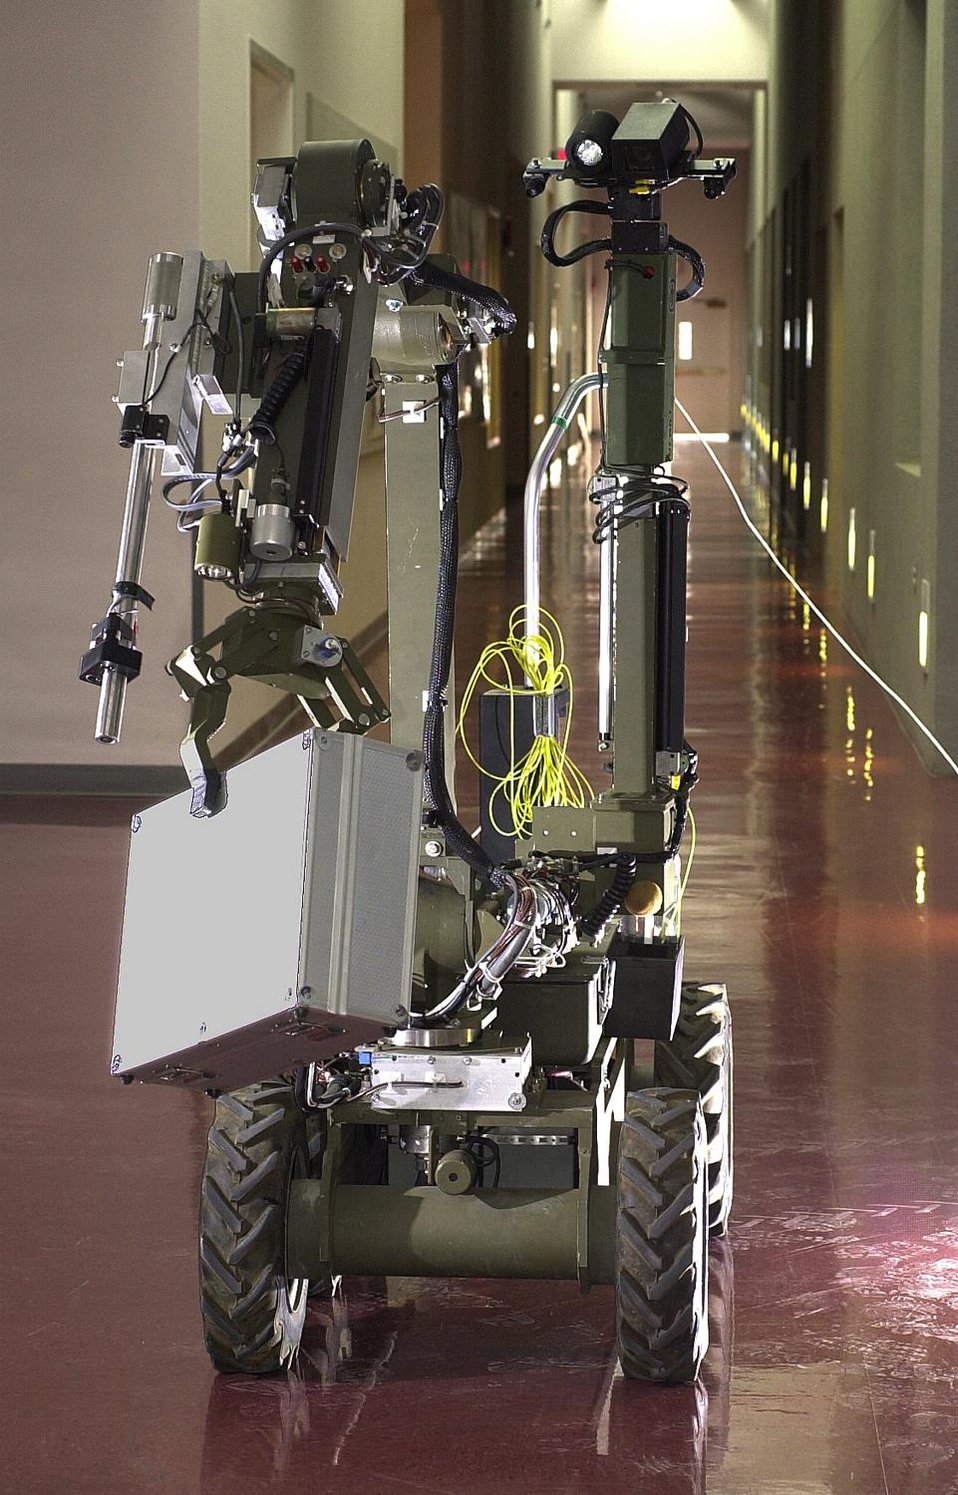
BOMB SQUAD ROBOTS ARE INCLUDED IN THE DEMONSTRATION OF BOMB DISABLEMENT TOOLS.

IN 1994 THE FIRST OPERATION AMERICA TRAINING PROGRAM WAS HOSTED BY SNL. SINCE THEN THERE HAVE BEEN REGIONAL WORKSHOPS THROUGHOUT THE NATION THAT INCLUDE CLASSROOM INSTRUCTION AND RANGE DEMONSTRATIONS OF BOMB DISABLEMENT TECHNIQUES. OPERATION AMERICA TRAINING WORKSHOPS ARE SPONSORED BY THE U.S. DEPARTMENTS OF JUSTICE, DEFENSE AND ENERGY.